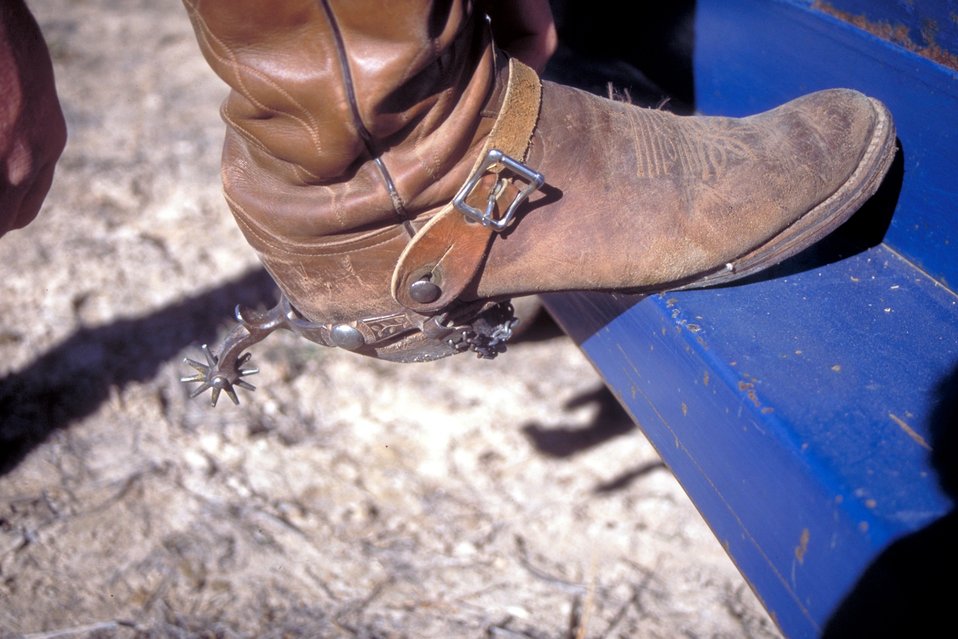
Working cowboys living near Vernal, Utah.